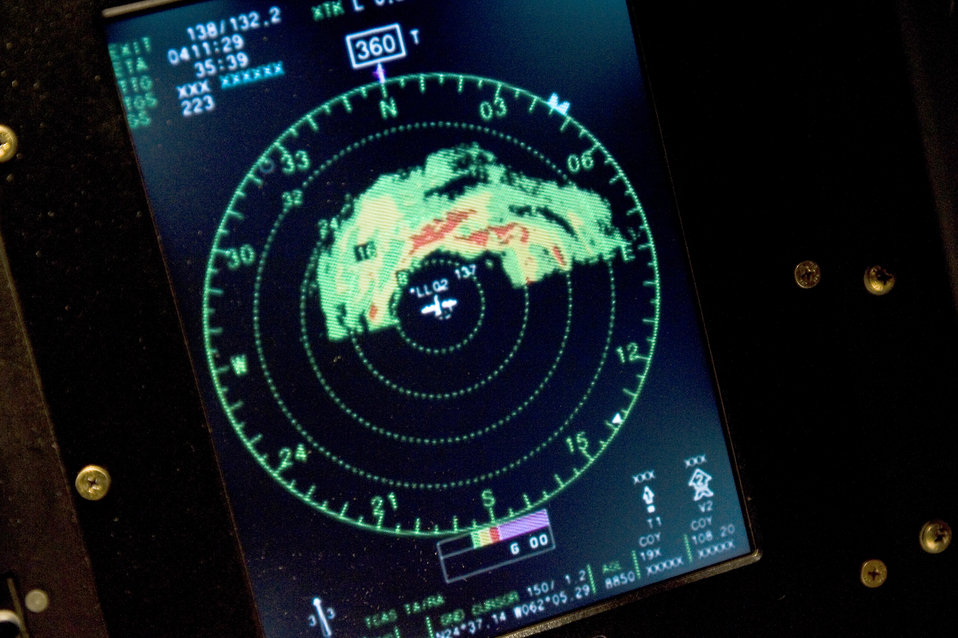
Hurricane hunters on Igor

The radar image of Hurricane Igor's eyewall onboard a WC-130J Hercules keeps Airmen from the 53rd Weather Reconnaissance Squadron busy over the Atlantic Ocean, Sept. 17, 2010. Known as the